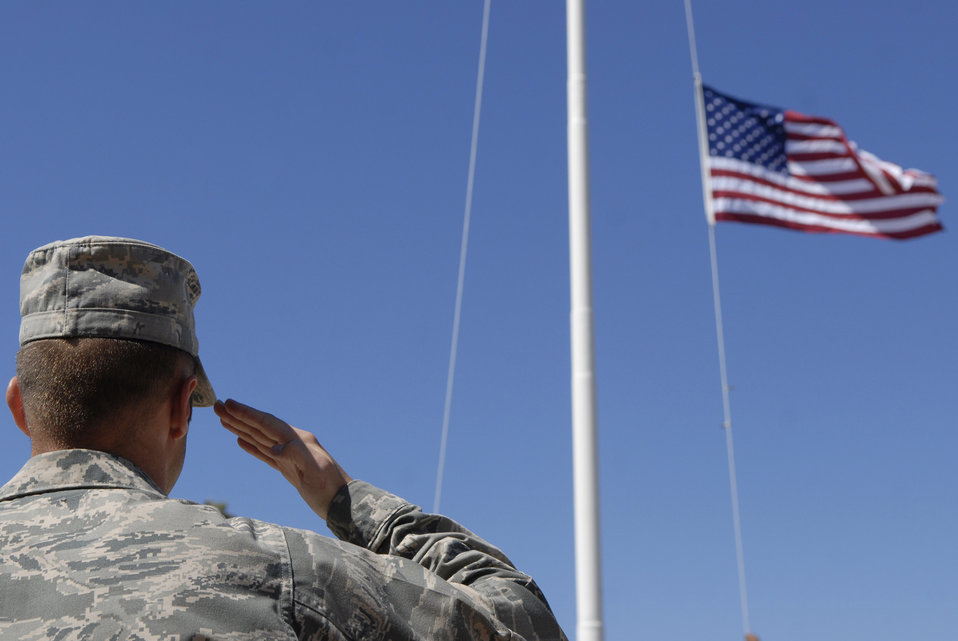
Saluting the red, white and blue

Second Lt. Brandon Jacobson salutes during a retreat ceremony June 30, 2011, at Vandenberg Air Force Base, Calif. Jacobson is assigned to the 30th Comptroller Squadron.